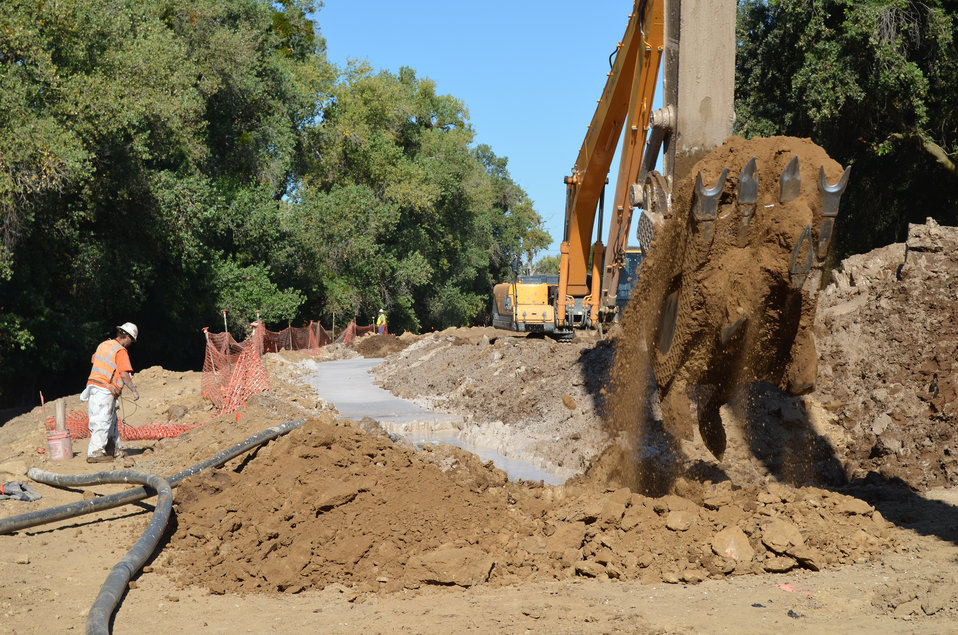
Work continues on 3,300 feet of seepage cutoff wall

Work continues Oct. 2, 2013, on 3,300 feet of seepage cutoff wall along the north bank of the American River in north Sacramento, Calif. Completion is targeted for mid-October. Construction crews for the U.S. Army Corps of Engineers Sacramento District are helping ensure the levee's height and slope will be brought back to pre-construction levels by November 1 – in time for the rainy season.